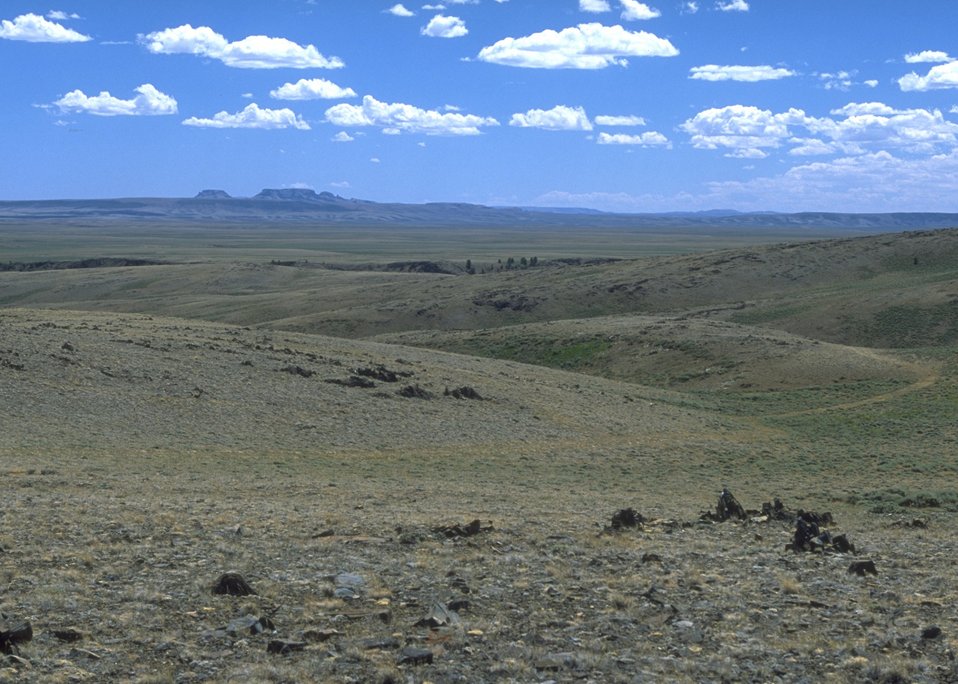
Continental Divide Trail with Oregon Buttes in background, Lander Field Office.